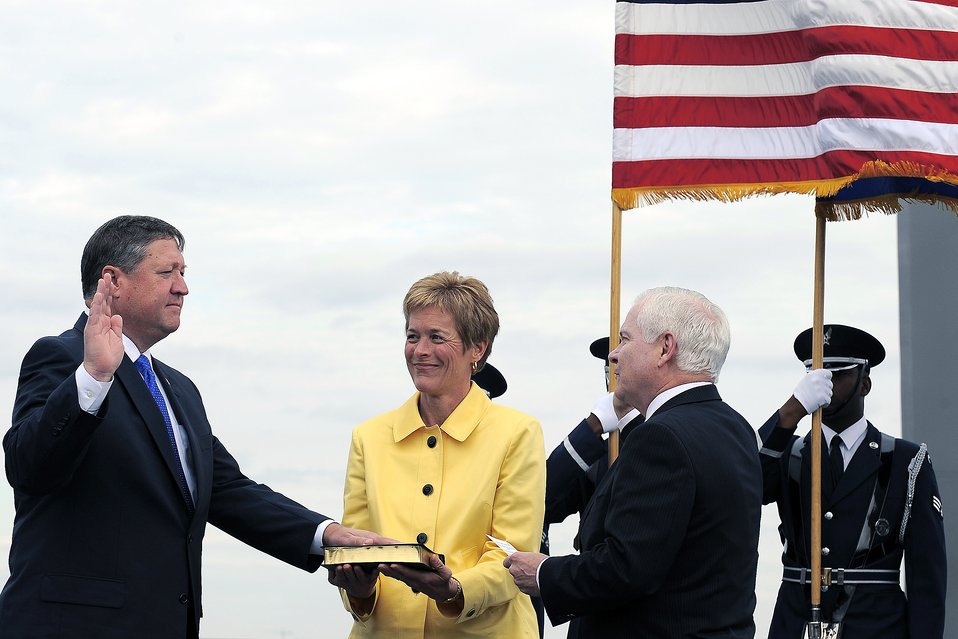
Secretary of Defense Robert M. Gates

U.S. Defense Secretary Robert M. Gates swears in Secretary of the Air Force Michael B. Donley at a ceremony Oct. 17 at the Air Force Memorial in Arlington, Va., as his wife, Gail Donley, looks on.